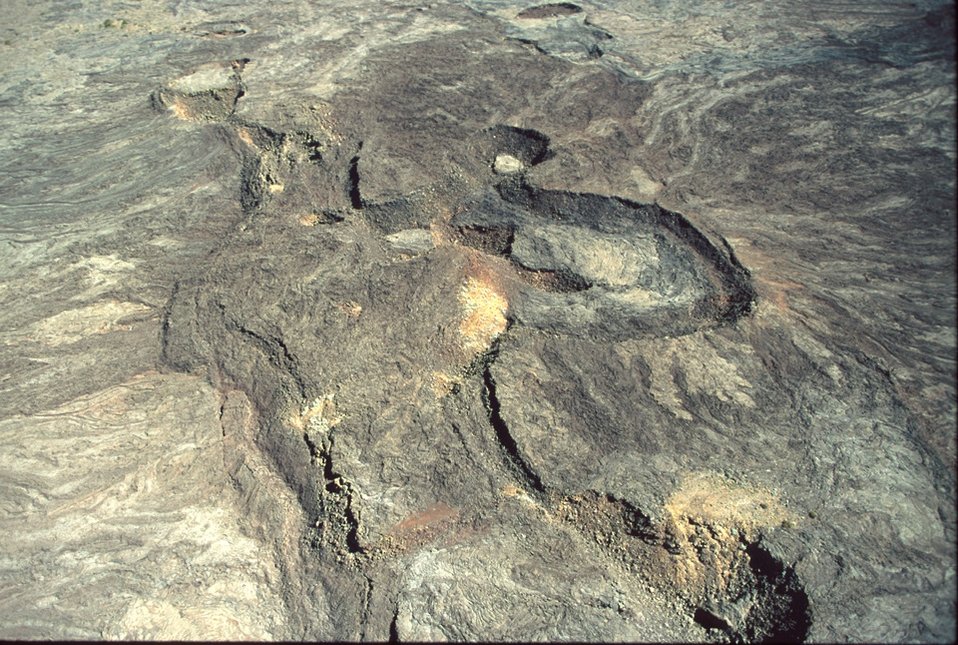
Craters of the Moon National Monument Shoshone Field Office USRD Upper Snake River District